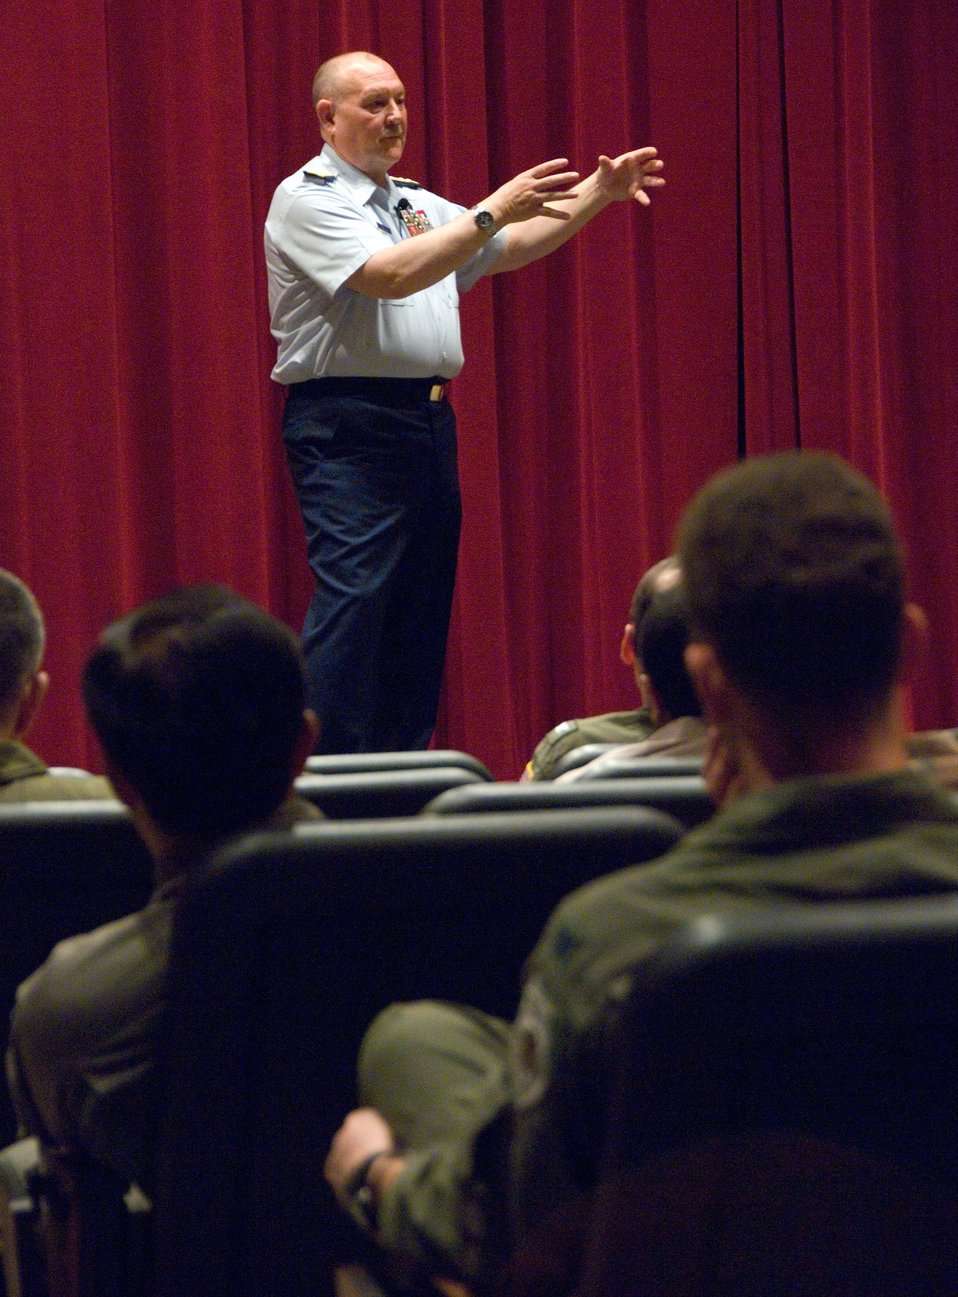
Top officer cites Coast Guard-Air Force ties

Adm. Thad Allen, U.S. Coast Guard commandant, addresses Air War College students April 9 about homeland security. The admiral's speech, which also touched on some of the ways the Coast Guard and Air Force work together, was part of the Air War College Distinguished Lecture Series.